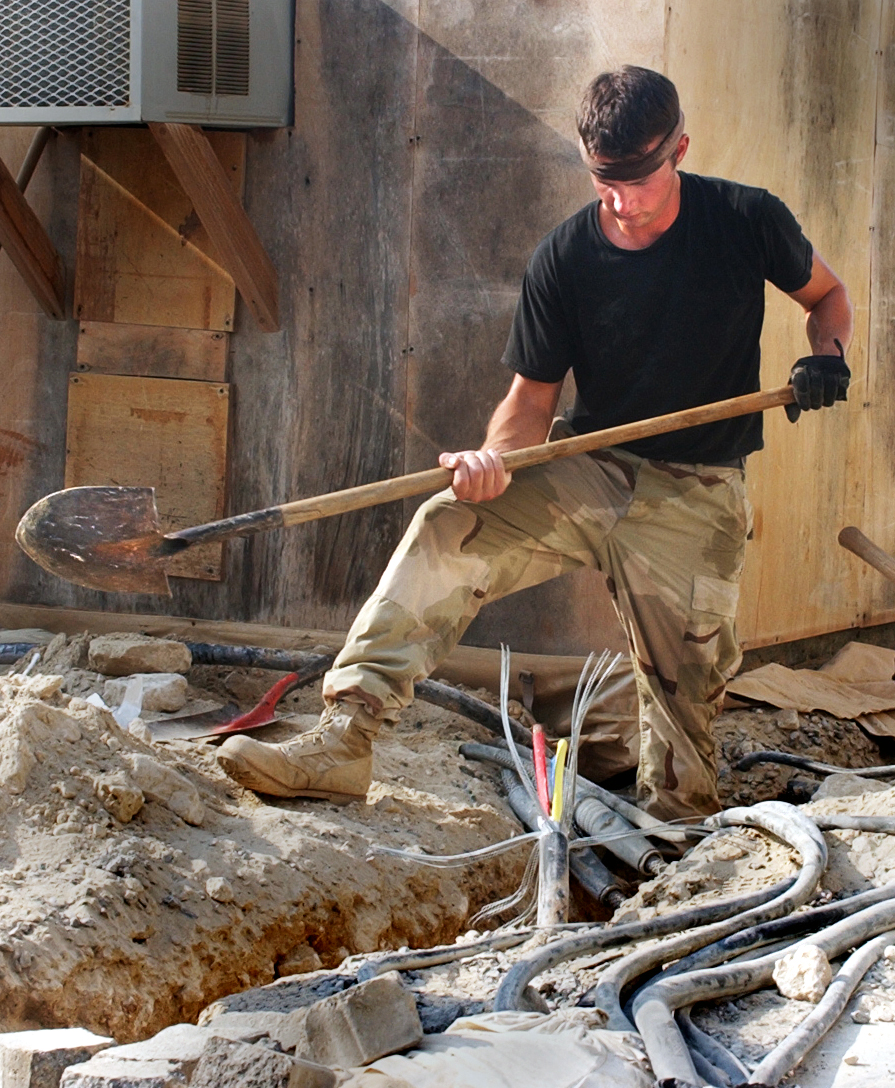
Dig in

OPERATION ENDURING FREEDOM -- Senior Airman Travis Miller digs a trench for electrical cables at a forward-deployed location in Southwest Asia. The work is part of an upgrade of the electrical system at the base. Miller is assigned to the 380th Civil Engineer Squadron and is deployed from Beale Air Force Base, Calif.